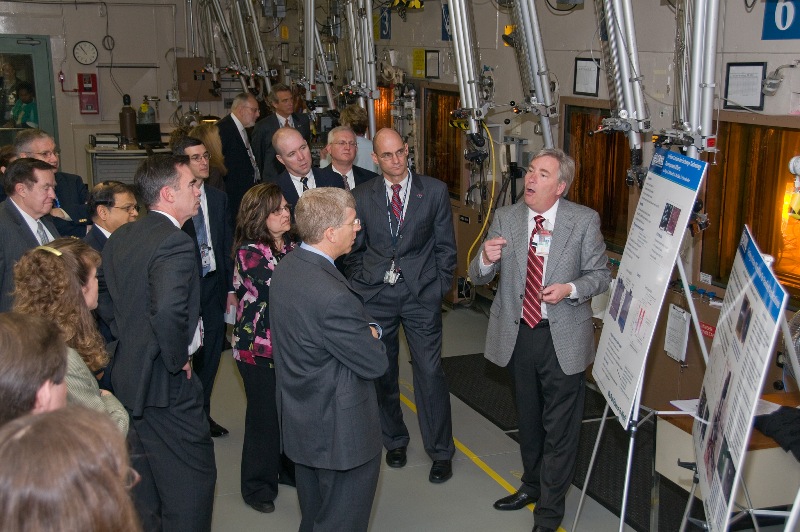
4080149107 bcf07fbee8 o